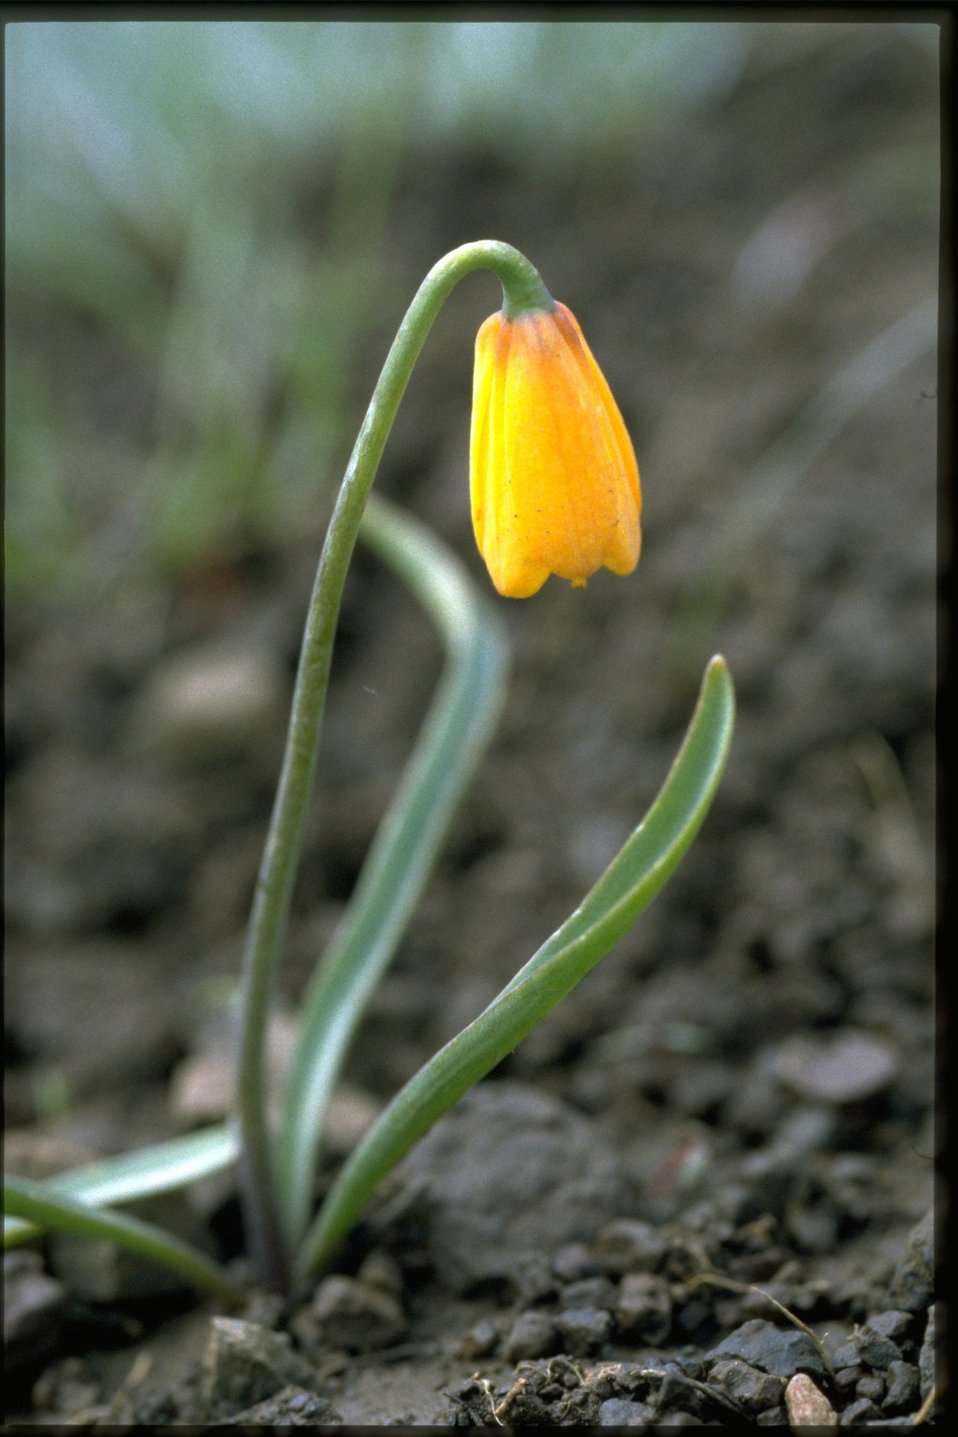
Closeup shot of Yellow Fritillary, Fritillaria Pudica, wildflower.